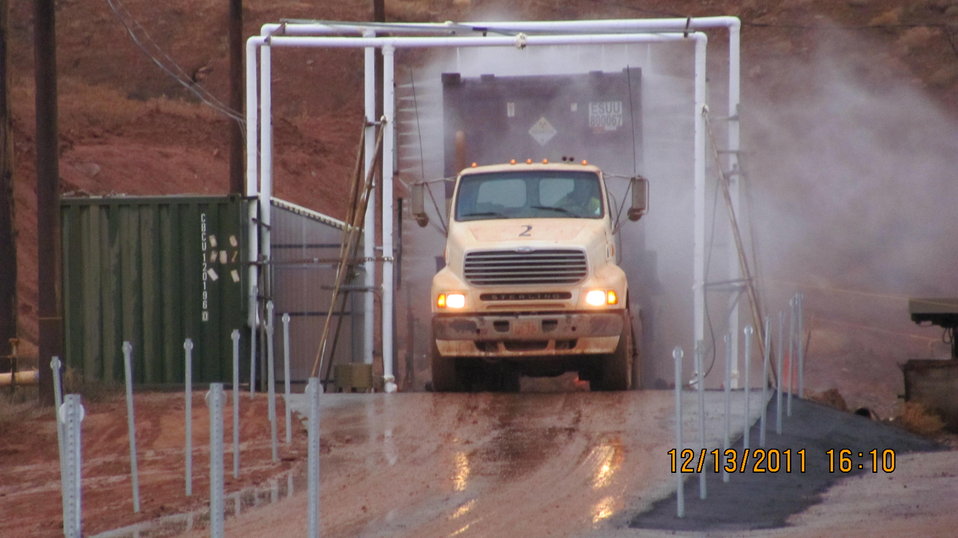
Moab Shipments

The exterior of containers that hold the uranium mill tailings being transported to the disposal cell at Crescent Junction are rinsed at the Moab site prior to being loaded onto railcars to ensure no contamination remains on the outside. Recently, a concrete road and pad were constructed beneath the wash facility and workers took the opportunity to perform maintenance while the system was down. The upgrades to the container rinse system have improved its safety and efficiency, and decreased equipment damage.